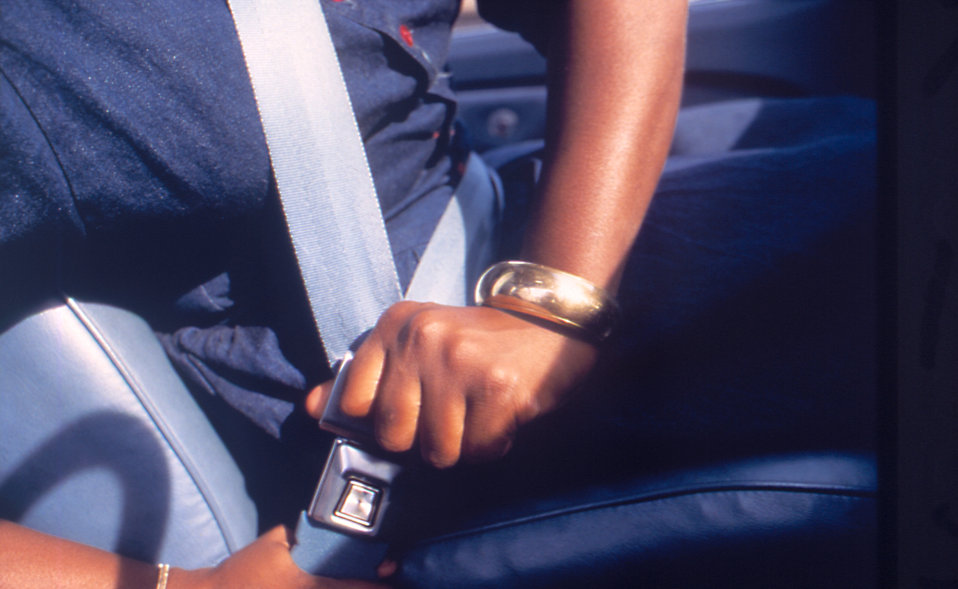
Person fastening seat belt in motor vehicle.